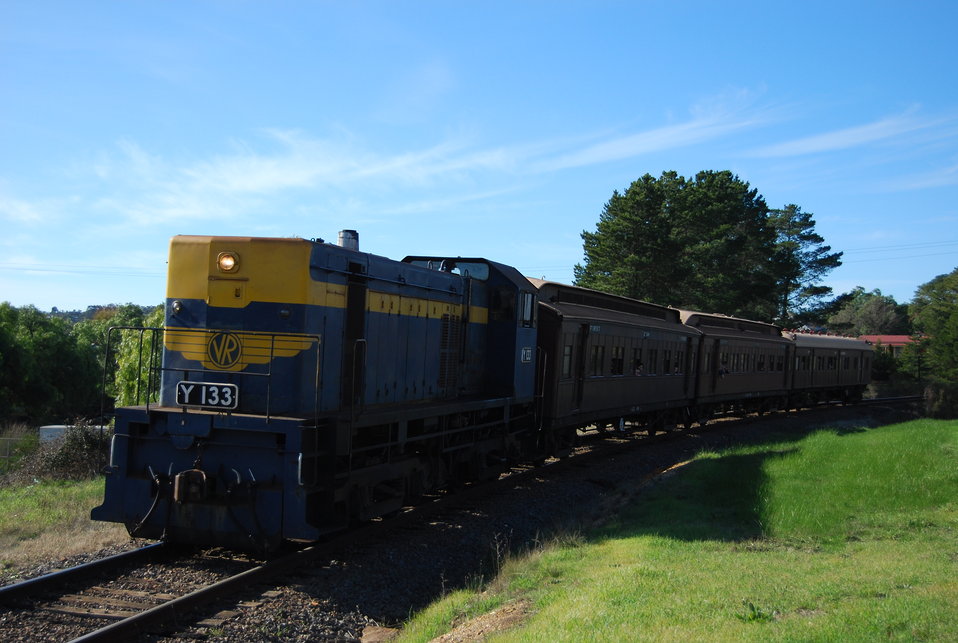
Y133 with a tourist train to Maldon near Castlemaine.